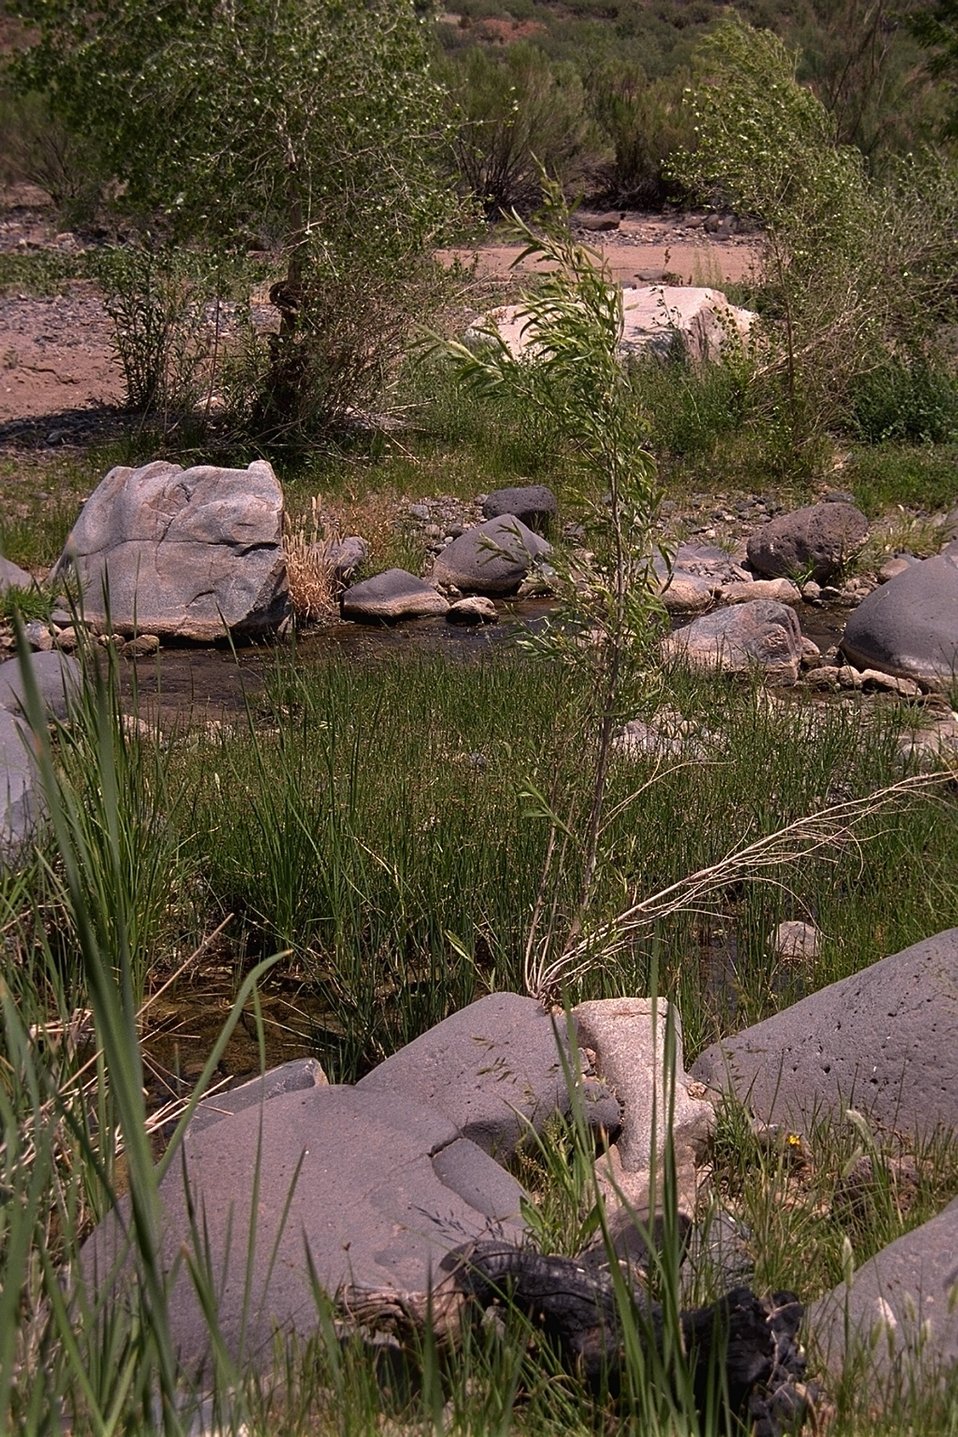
The water of the Agua Fria River runs shallow here through rocks and green foliage.